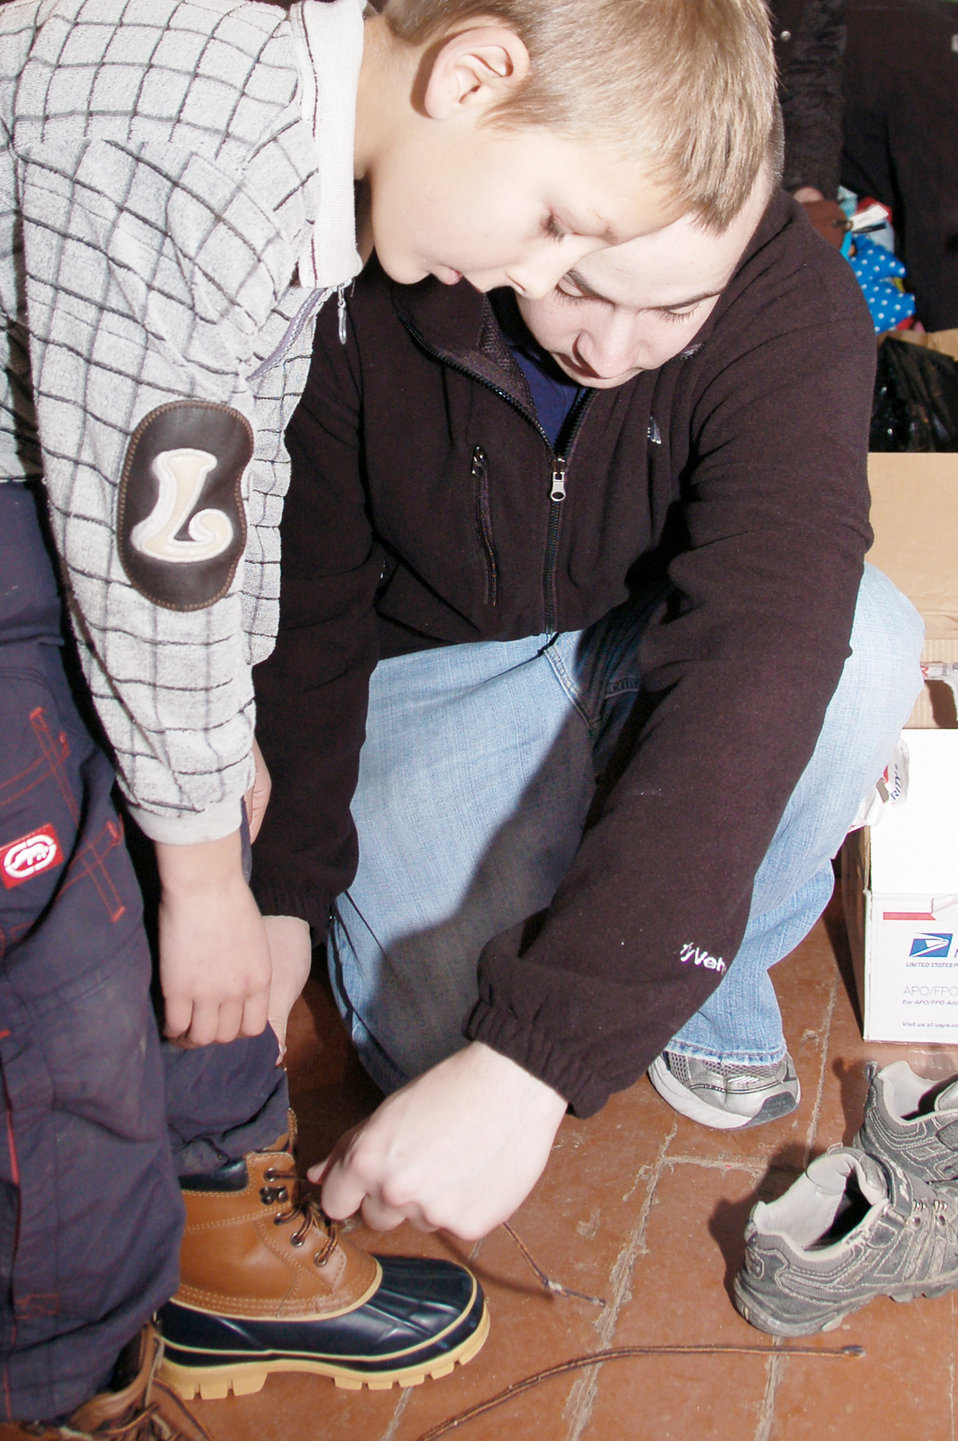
Airmen distribute donations to orphanage in Kyrgyzstan

Senior Airman John Reuter helps a Nizhanchuisk Orphanage student try on new boots that were donated recently. Airman Reuter is the Manas Area Benefit Outreach Society focus group leader for the Nizhanchuisk Orphanage and has reached out to many communities in the U.S. to help donate to the orphanage. Airman Reuter is a 376th Expeditionary Security Forces Squadron security journeyman.